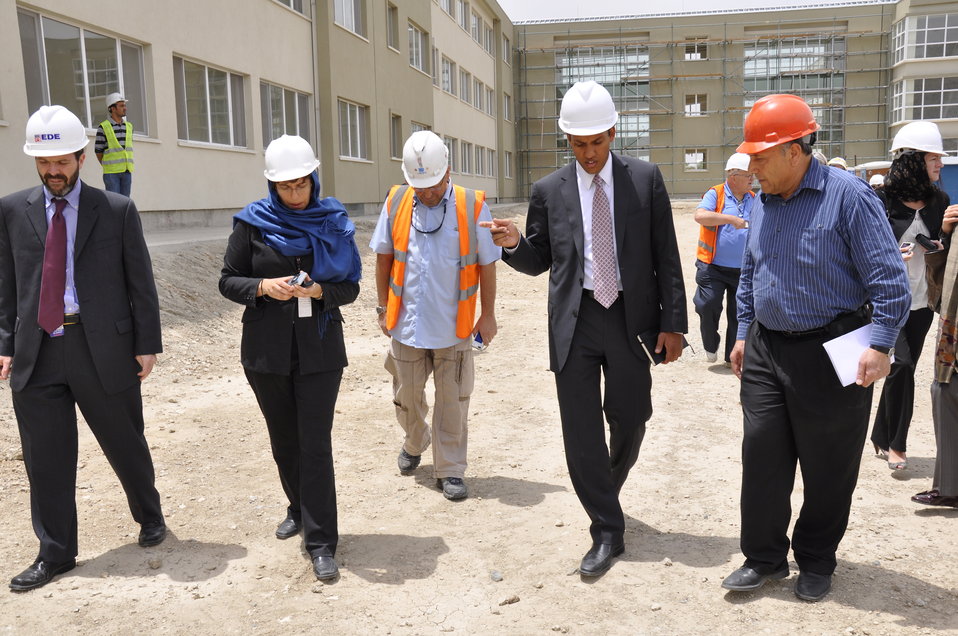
Ghazni High School in Kabul